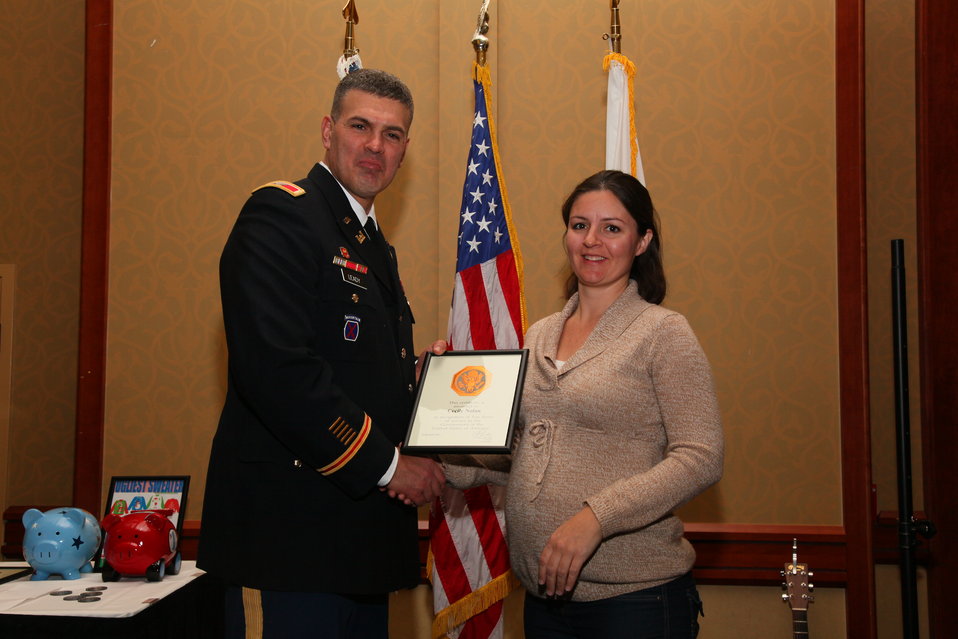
Sacramento District Holiday Party 2011